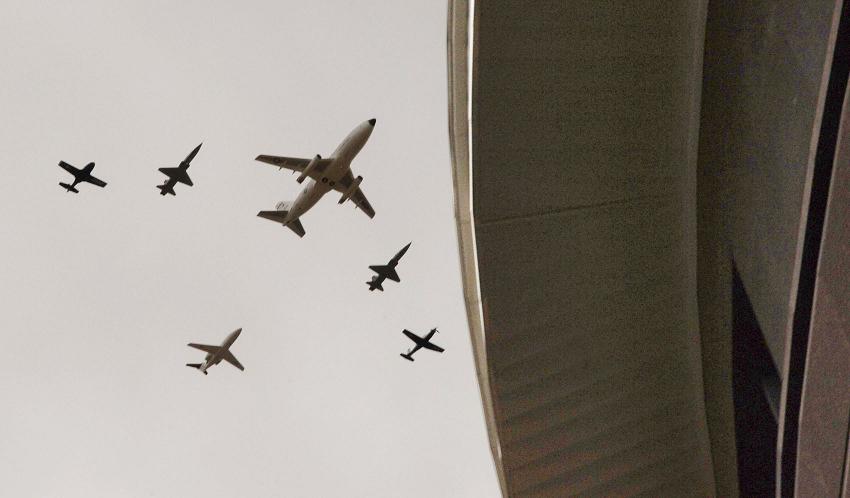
Center for Intrepid

A formation from the 12th Flying Training Wing at Randolph Air Force Base in San Antonio, follows the official ribbon-cutting ceremony Jan. 29 of the new Center for the Intrepid, a state-of-the-art rehabilitation center.